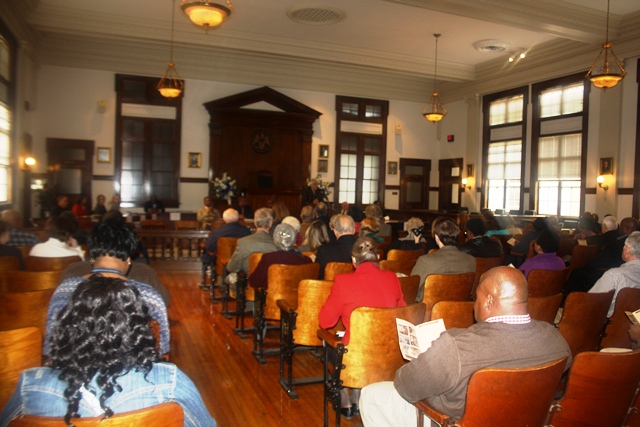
The inside of the newly restored courthouse and the attendees at the Grand Opening Ceremony.